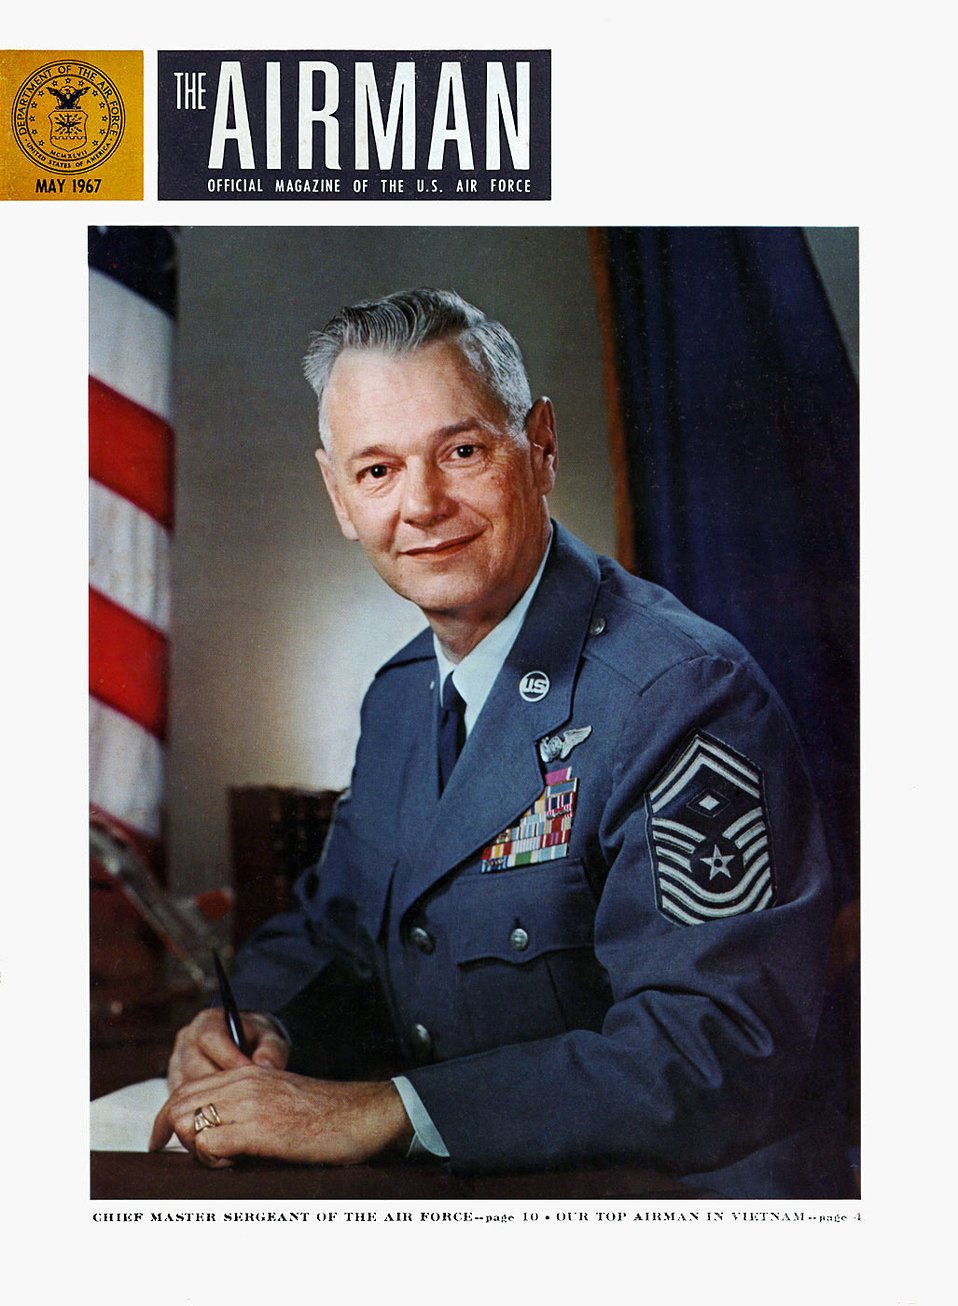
Air Force Enlisted's 1st top chief reflects on historic career

The cover of the May 1967 issue of Airman magazine announced the creation of a new NCO leadership position, Chief Master Sergeant of the Air Force, and the appointment of Chief Master Sgt. Paul Airey as the first to fill the position.